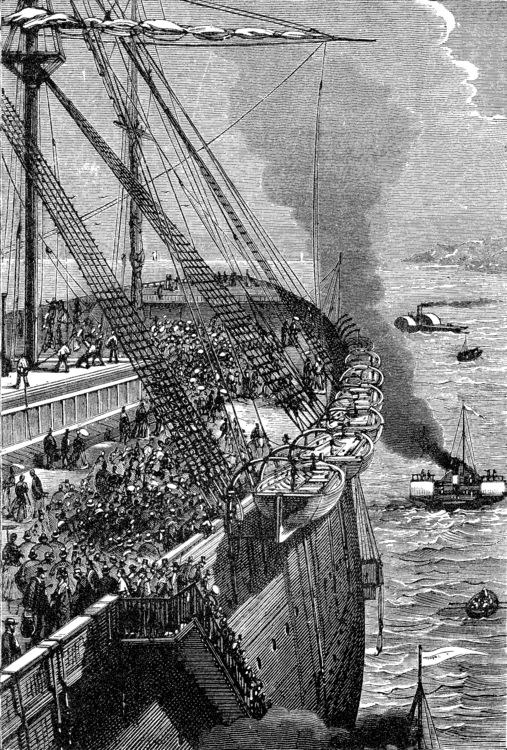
An illustration from Jules Verne's novel 'A Floating City' (1869) drawn by Jules Férat. Polski: Ilustracja powieści Juliusza Verne'a 'Pływające miasto' (1869) autorstwa Julesa Férata. Français : Jules Verne: 'Une Ville flottante' (1869), dessins par Jules Férat. Orginal text: Français : Alors commença l’interminable ascension.